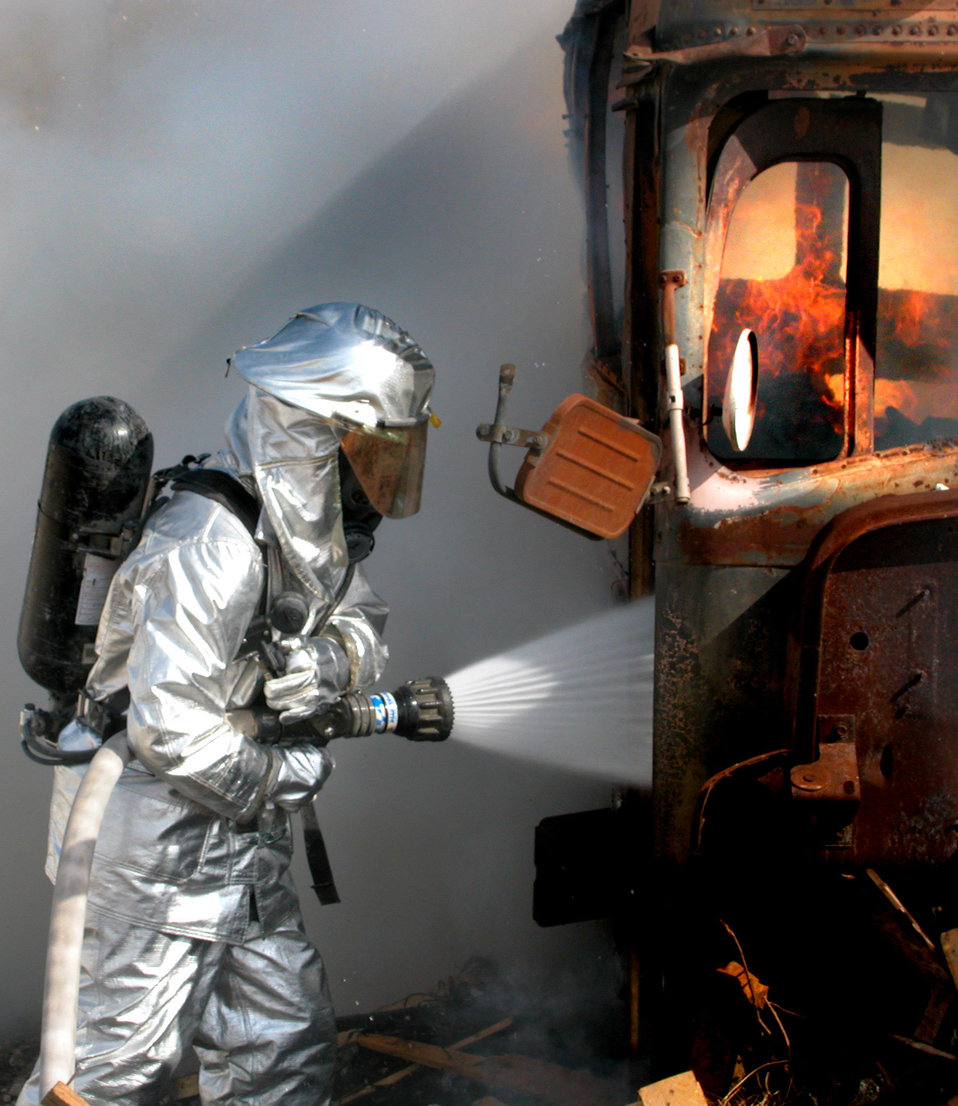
Water logged

OPERATION ENDURING FREEDOM -- Senior Airman Michael Gidich douses a training fire at a forward-deployed location in Southwest Asia. Gidich is a firefighter from the 910th Civil Engineer Squadron at Youngstown Air Reserve Station, Ohio. He is deployed to the 380th Expeditionary Civil Engineer Squadron.